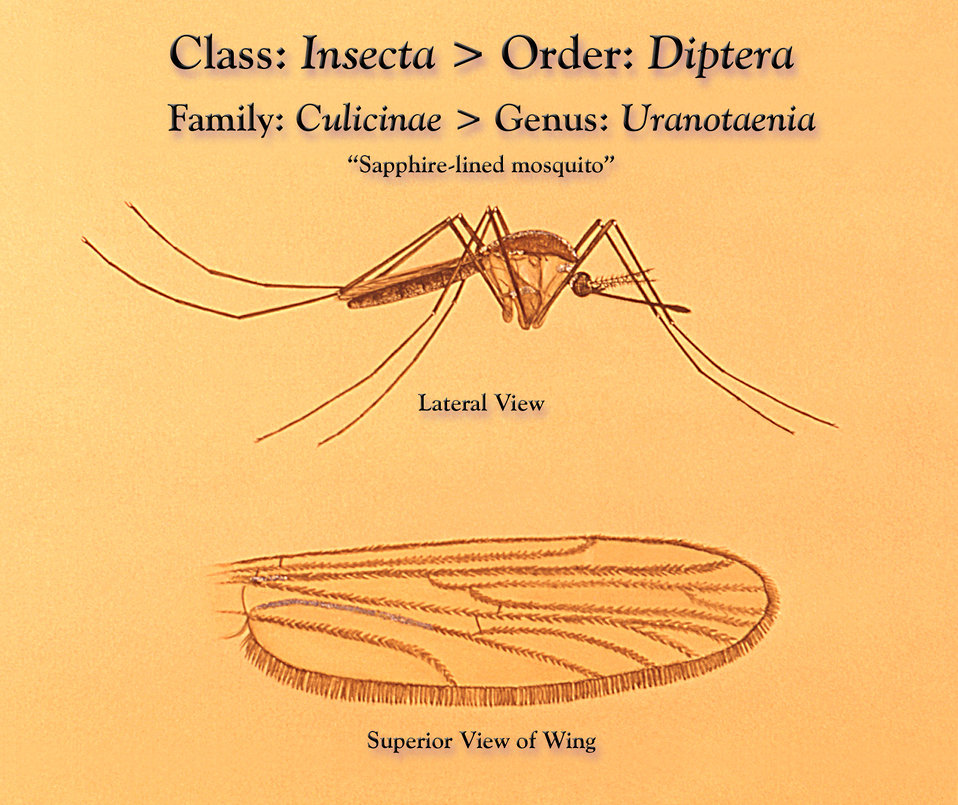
This illustration depicts a Uranotaenia sapphirina mosquito from a lateral view, and an inset of one of its wings from a superior perspective detailing its venation pattern.